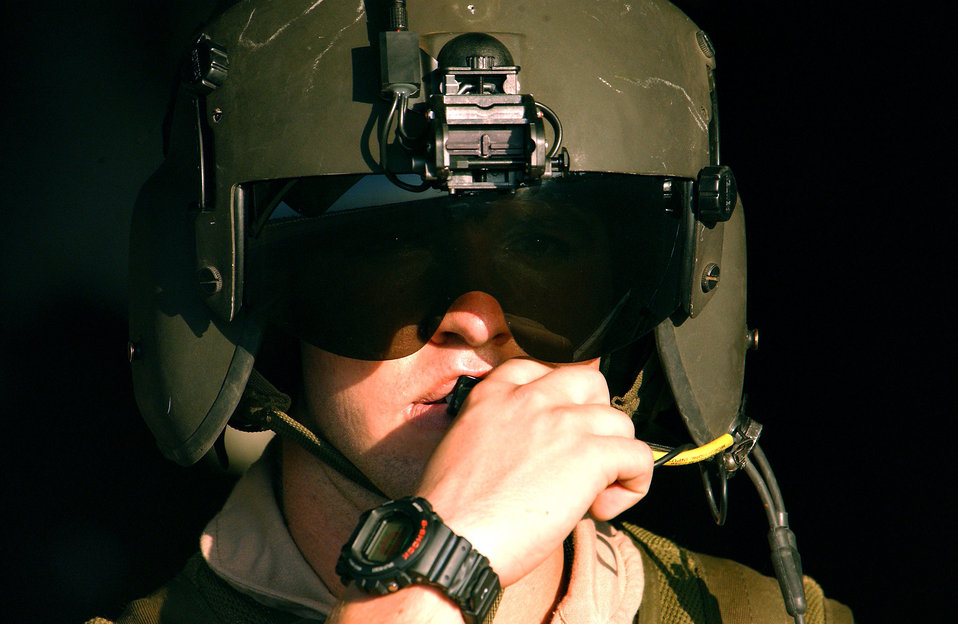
African operations

DJIBOUTI, Africa -- An aerial gunner deployed to the Combined Joint Task Force-Horn of Africa communicates with a pilot during pre-flight checks before departing in an MH-53 helicopter for a mission. Task force members are deployed to Camp Lemonier here supporting Operation Enduring Freedom.